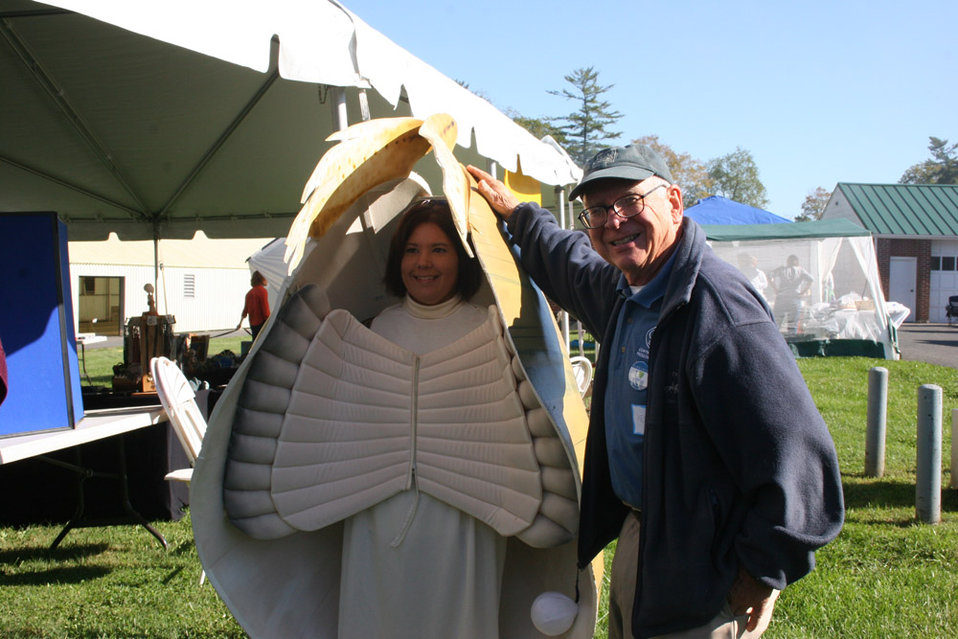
Freshwater Folk Festival

The 5th Annual Freshwater Folk Festival at White Sulphur Springs National Fish Hatchery in West Virginia.Credit: USFWS